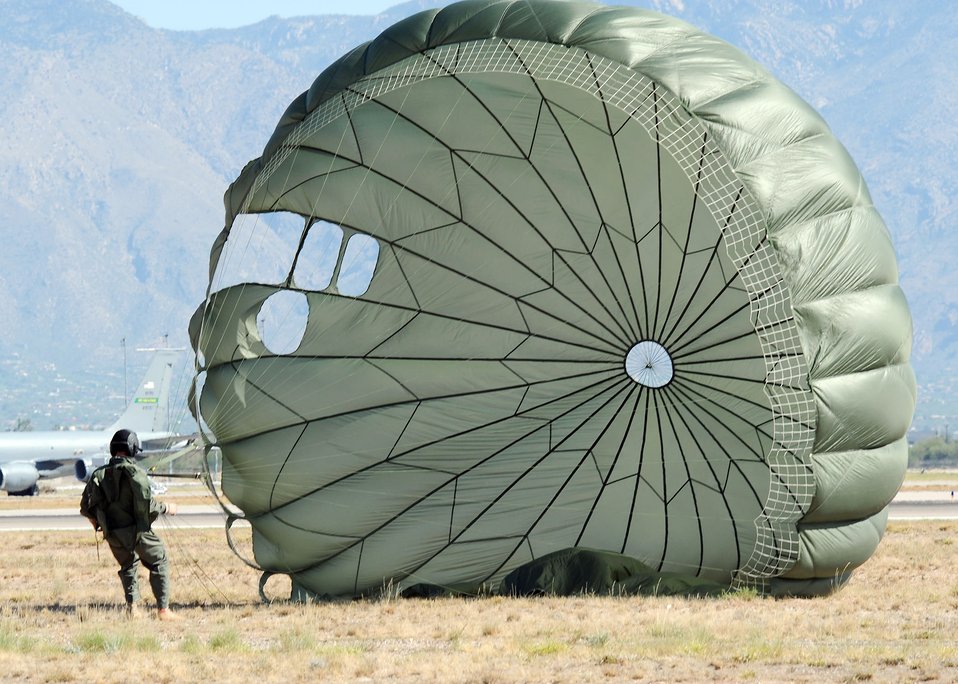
Multi-lift airdrop at Davis-Monthan AFB

Master Sgt. Howard Smith lands safely in the drop zone Aug. 15 at Davis-Monthan Air Force Base, Ariz. Sergeant Smith with fellow members of the Air Force Reserve Command's 306th Rescue Squadron, and the 79th Rescue Squadron participated in the first multi-lift HC-130 airdrop. The members normally must use another facility to conduct the drops.